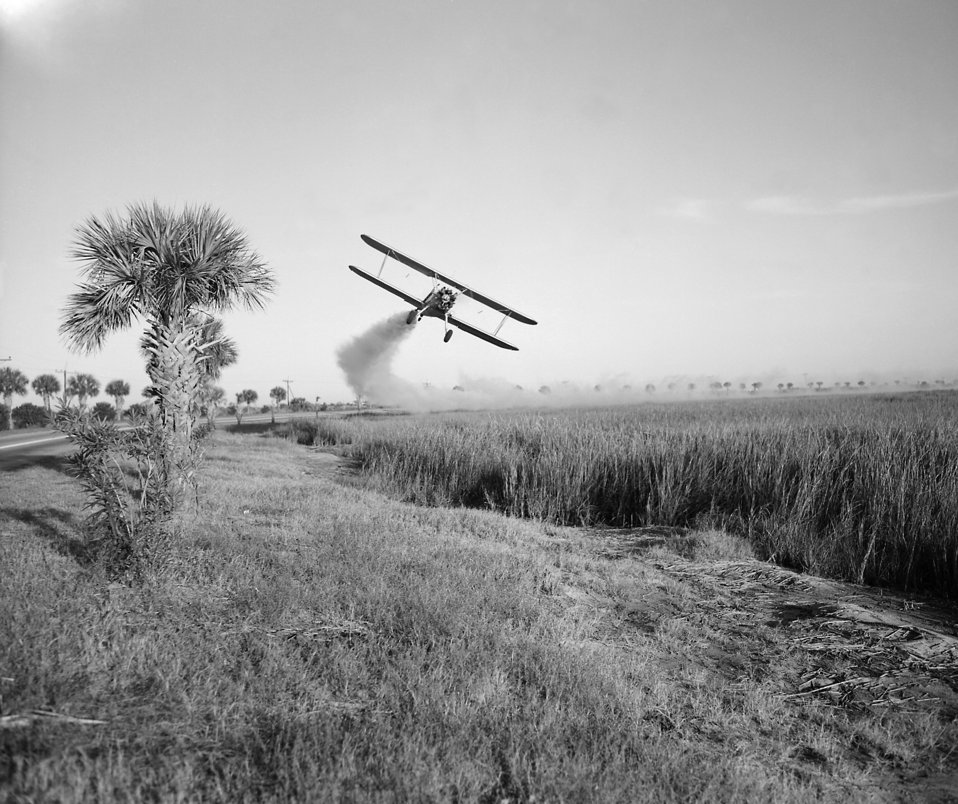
A Stearman bi-plane is spraying an insecticide during malaria control operations in Savannah, GA.